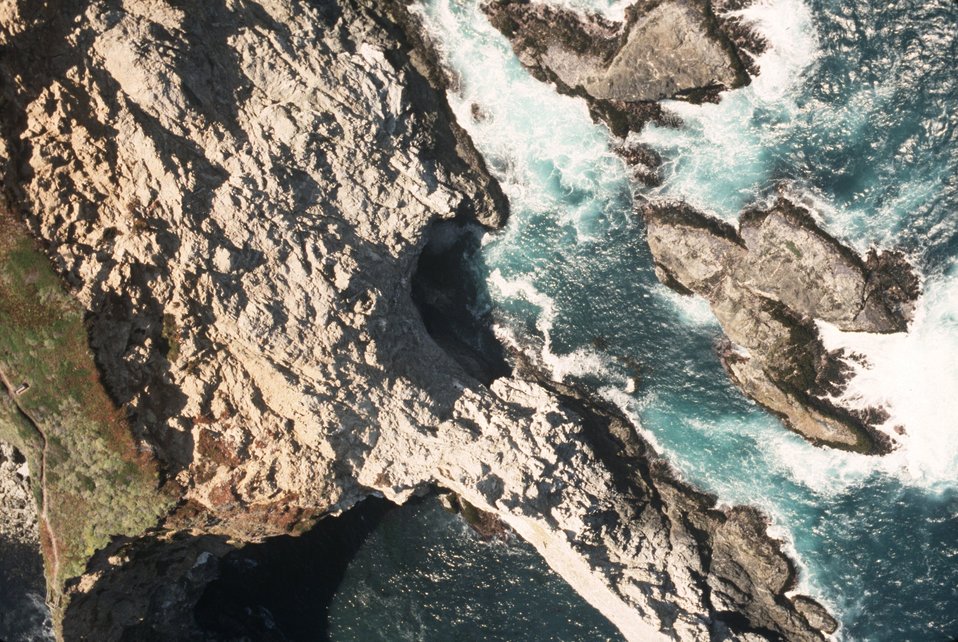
Unidentified rock headland with sea cave.